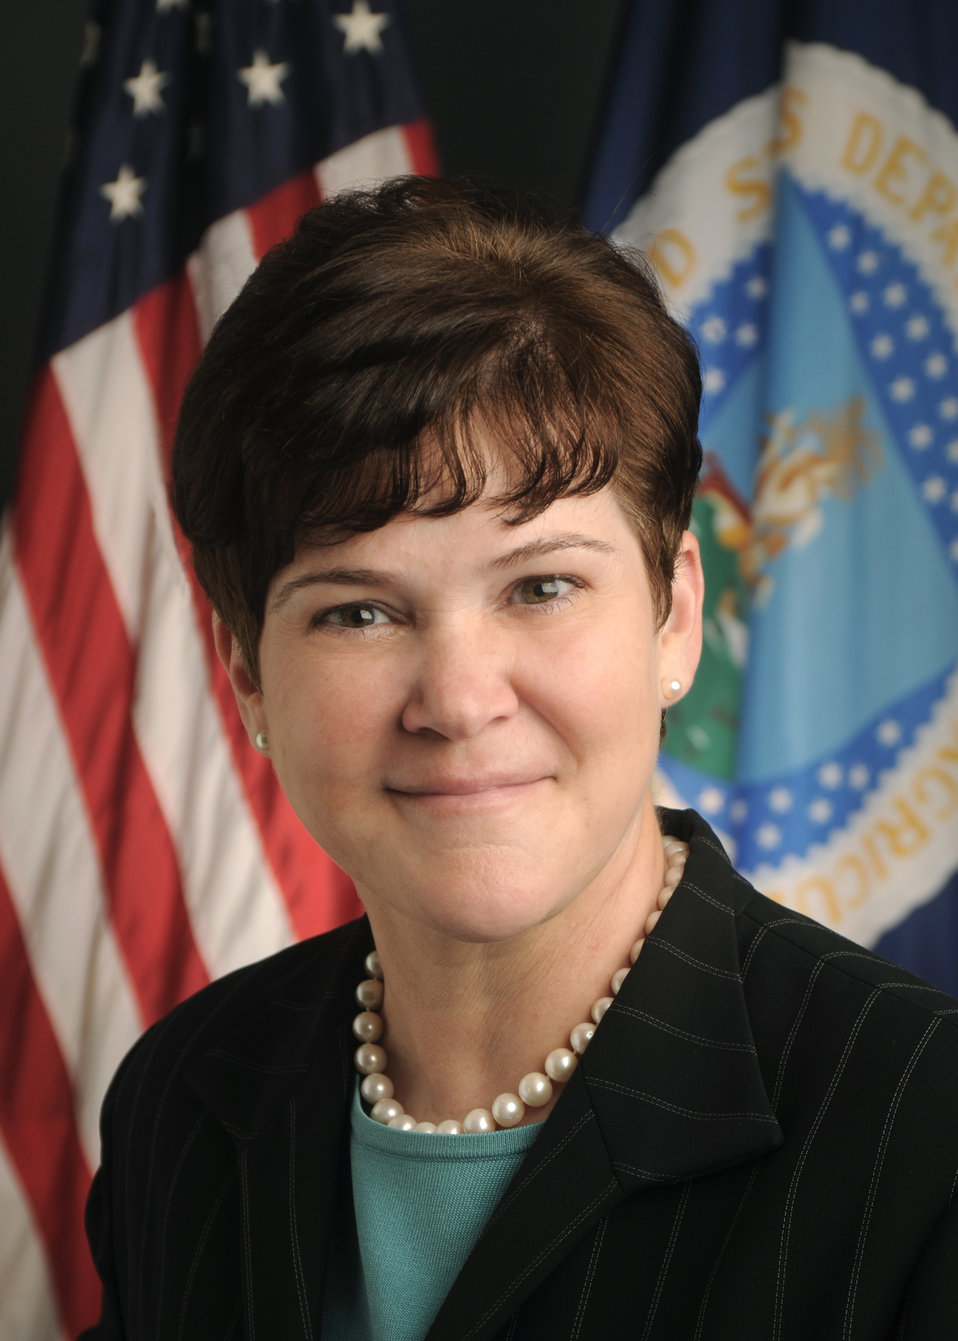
9di1119-010 Agriculture Deputy Secretary Krysta Harden

Agriculture Deputy Secretary Krysta Harden.